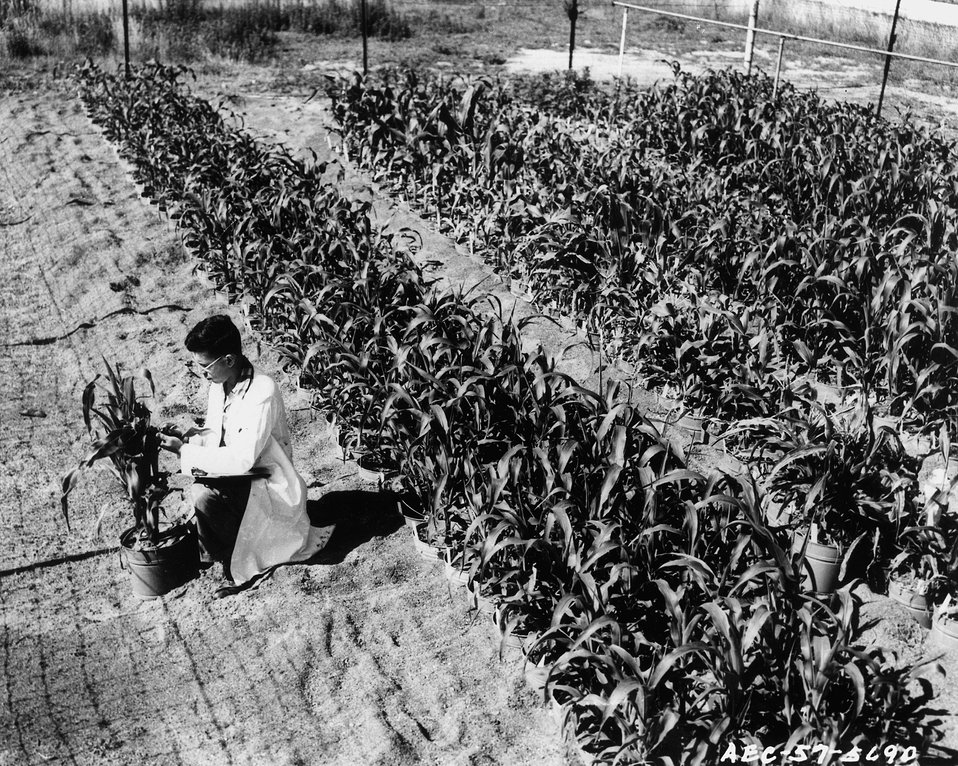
Portability of corn plant shortens time necessary for radiation experiments. c. 1957